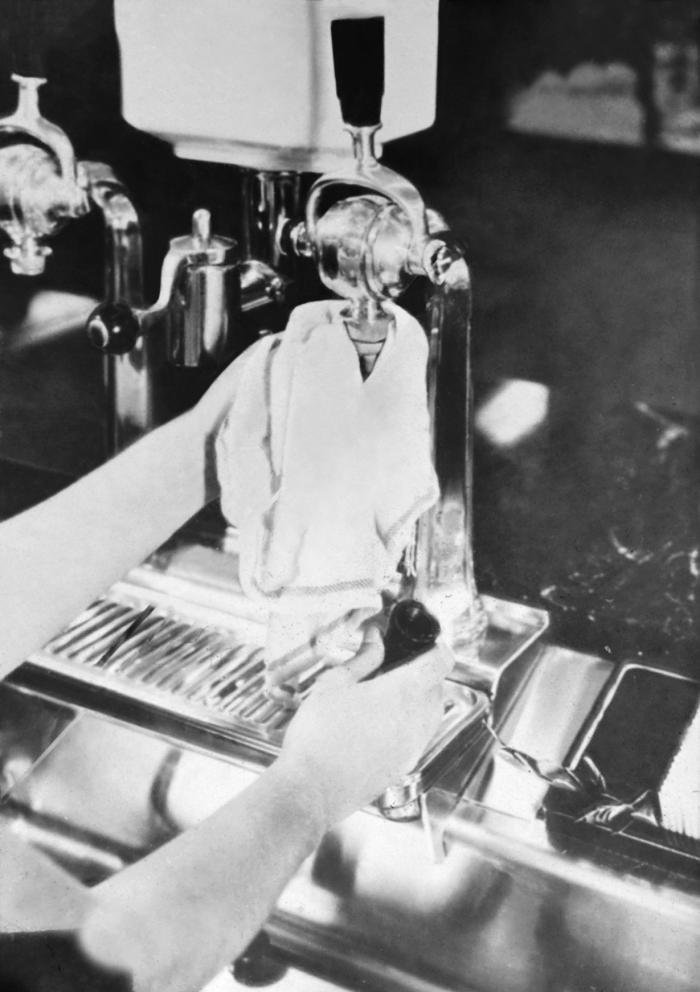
This historic 1950s photograph depicted a food processing worker cleaning the nozzle of a stainless steel beverage dispenser in an unspecified restaurant food preparation area. The image was part of a Minnesota Health Department campaign to promote safe food handling and to prevent food-borne illness.